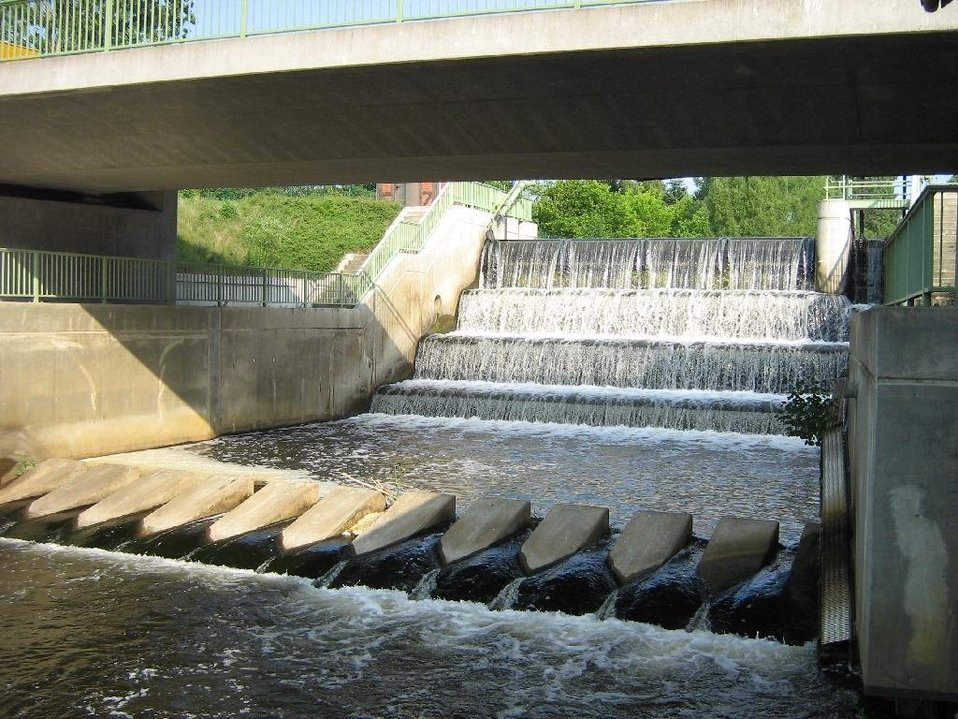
Deutsch: Der Dahme-Umflutkanal in Märkisch-Buchholz mit Wehr (Landkreis Dahme-Spreewald, Brandenburg)